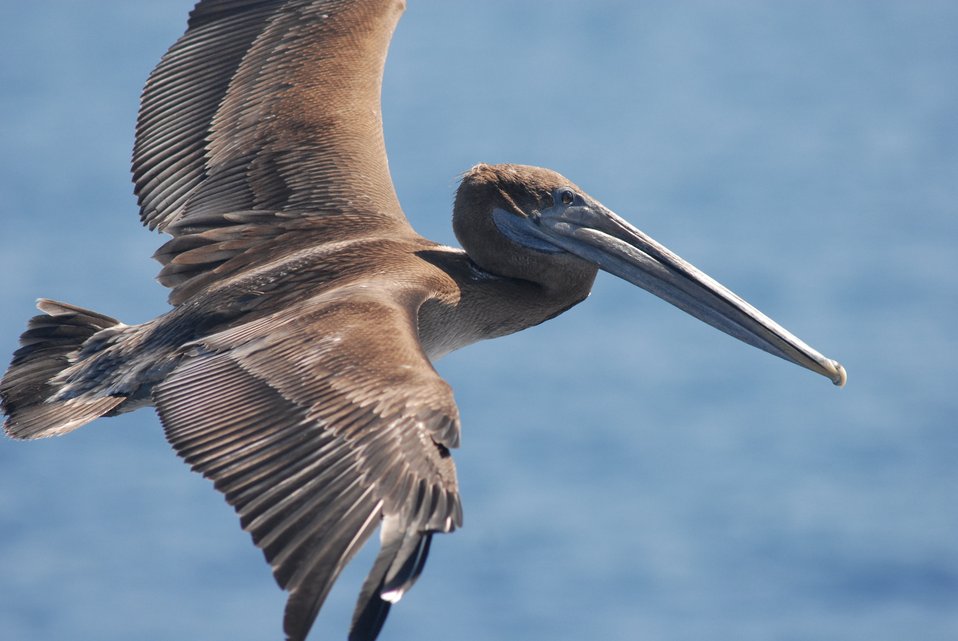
Magnificent brown pelican in flight.